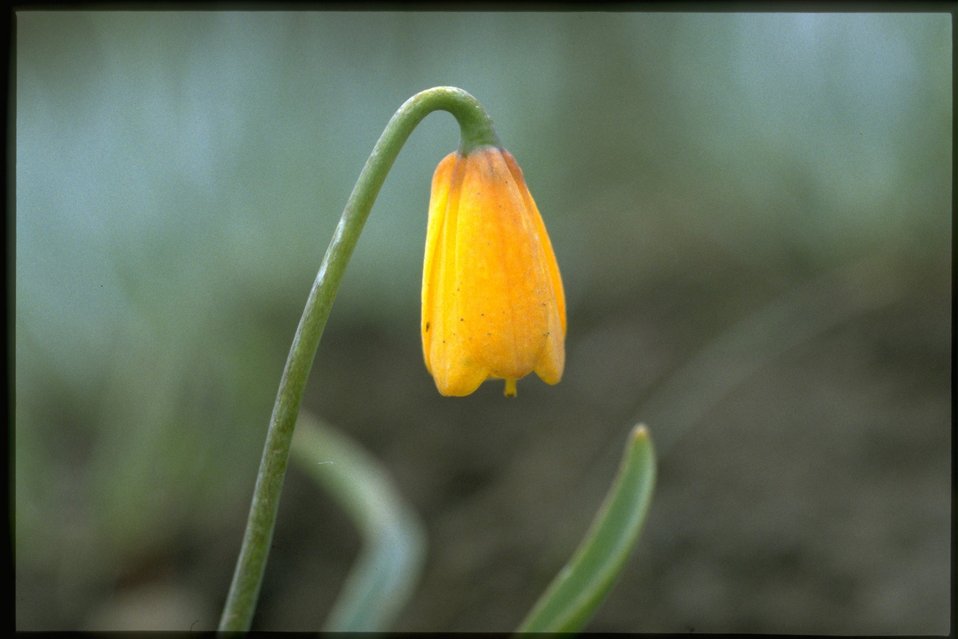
Closeup shot of Yellow Fritillary, Fritillaria Pudica, wildflower.